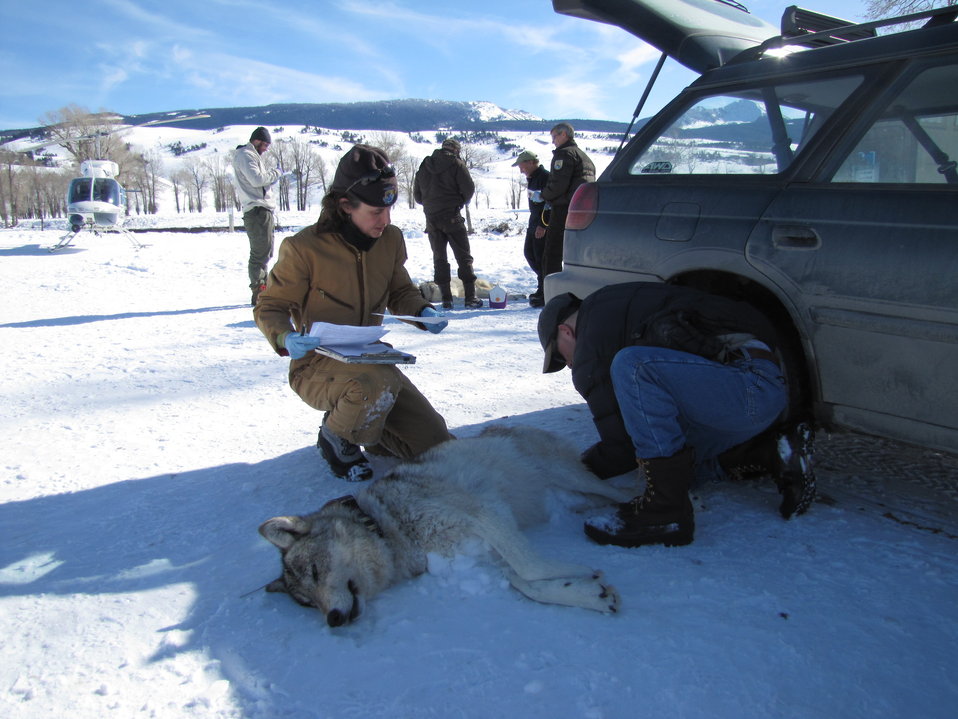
Recording Data

Visitor Services Lead Lori Iverson and Biology Volunteer Tim Pratt record data and monitor one of the four wolves during its immobilization. During the collaring process, staff checked the animals' temperature and respiration. This wolf was moved out of the sun to a shaded area to help regulate its temperature.